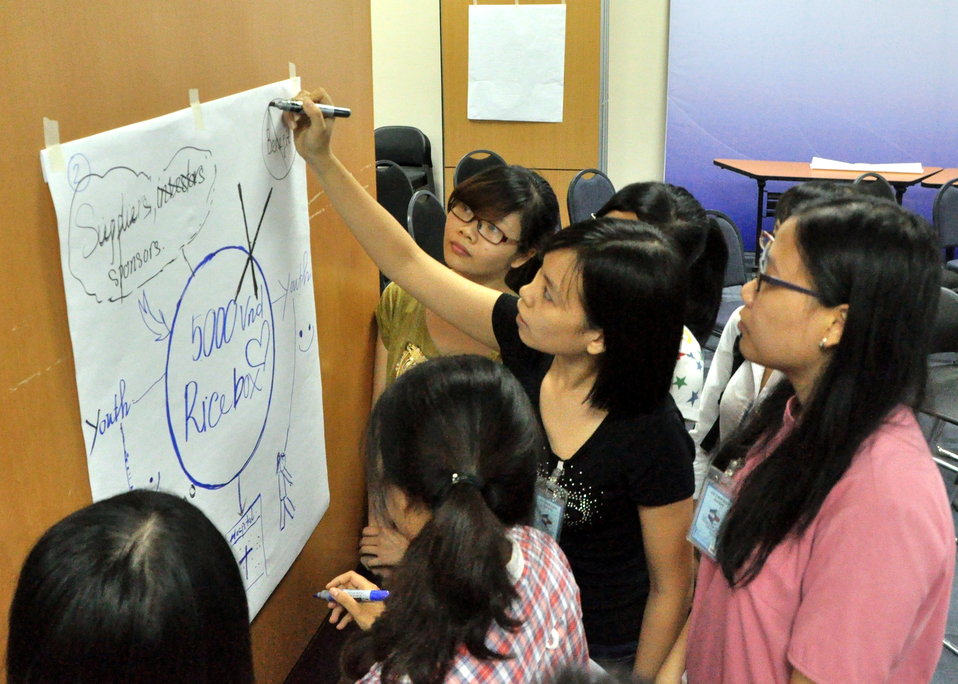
International Youth Day 2013: USAID hosts a lively discussion and group exercise on how youth can join in to advance development

Hanoi, August 12, 2013.